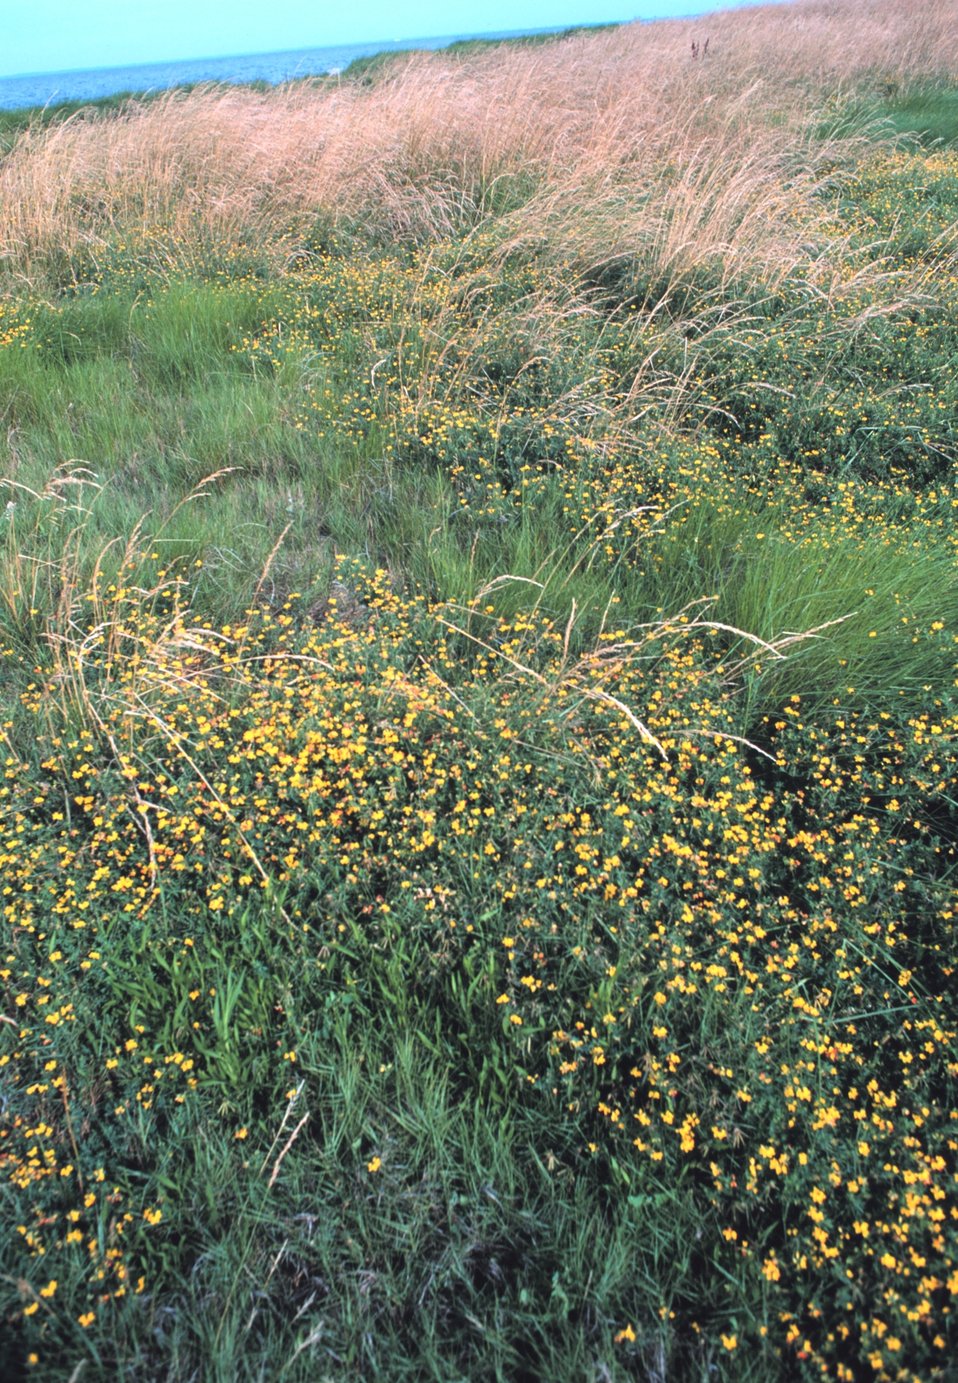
Flowers, grasses, and sea oats at the south end of Tilghman Island.